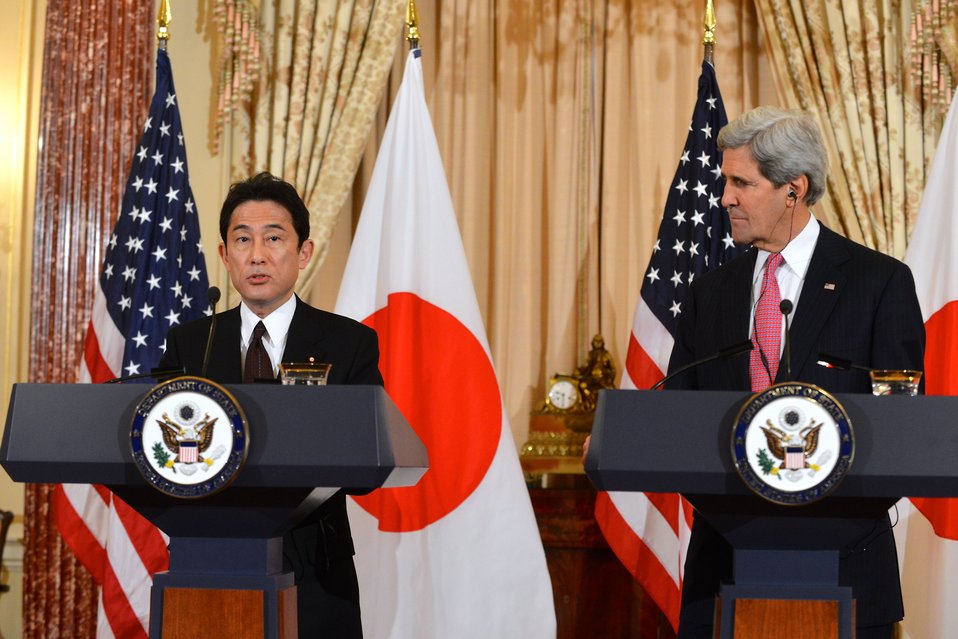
Secretary Kerry and Japanese Foreign Minister Kishida Deliver Remarks

U.S. Secretary of State John Kerry and Japanese Foreign Minister Fumio Kishida deliver remarks after their bilateral meeting at the U.S. Department of State in Washington, D.C., on February 7, 2014.